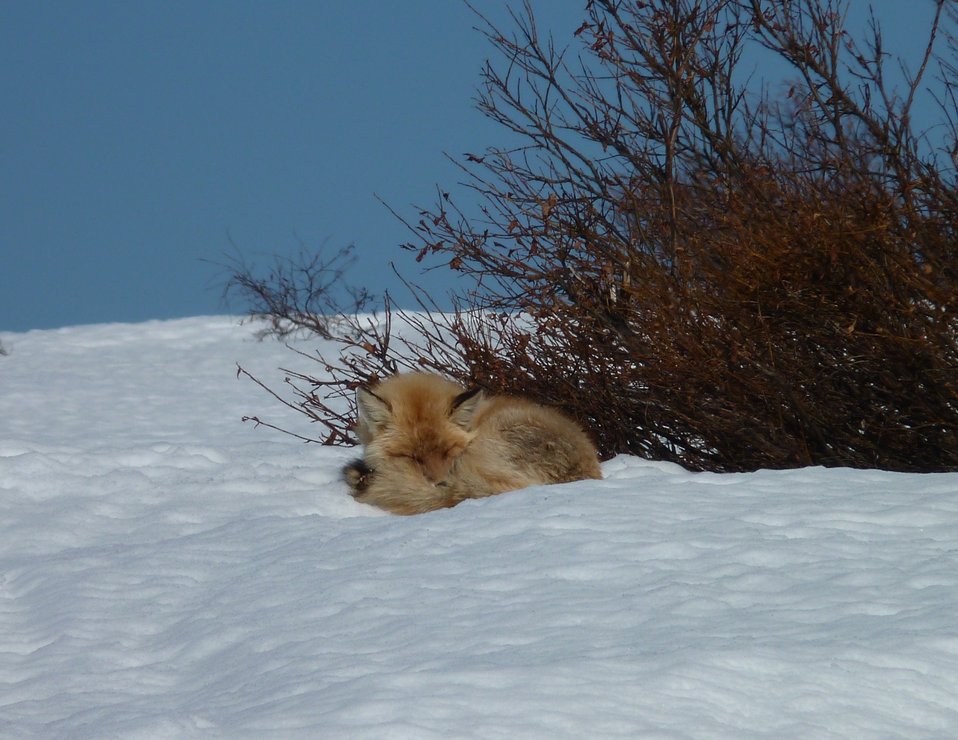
Red fox

Andreafsky Wilderness, Yukon Delta National Wildlife Refuge